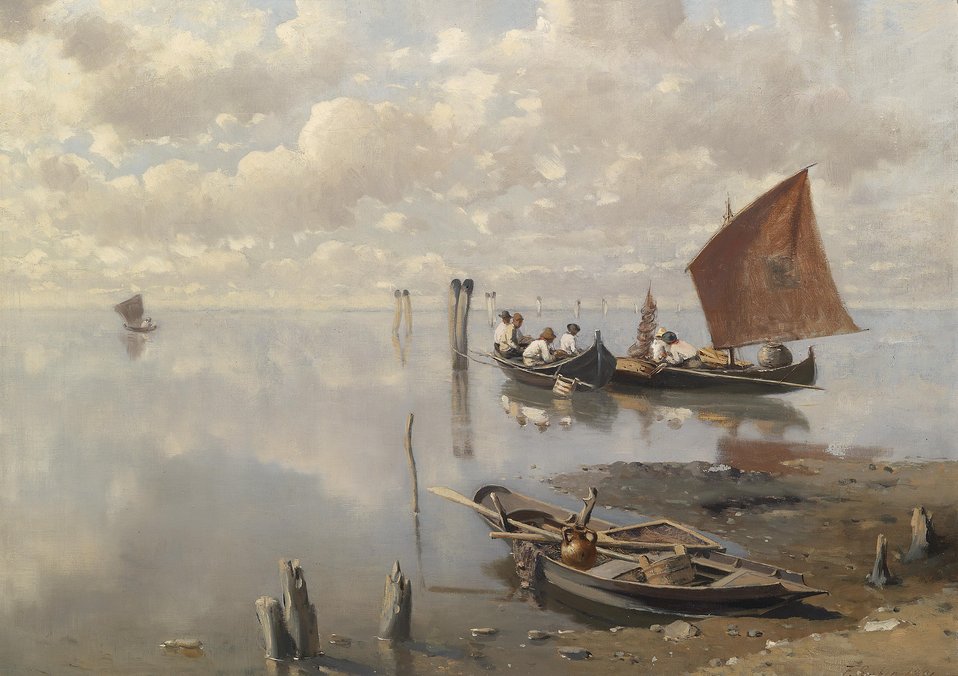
Deutsch: Fischer in der Lagune, signiert, datiert F. Ruben 1891, Öl auf Leinwand, 50,5 x 70,5 cm